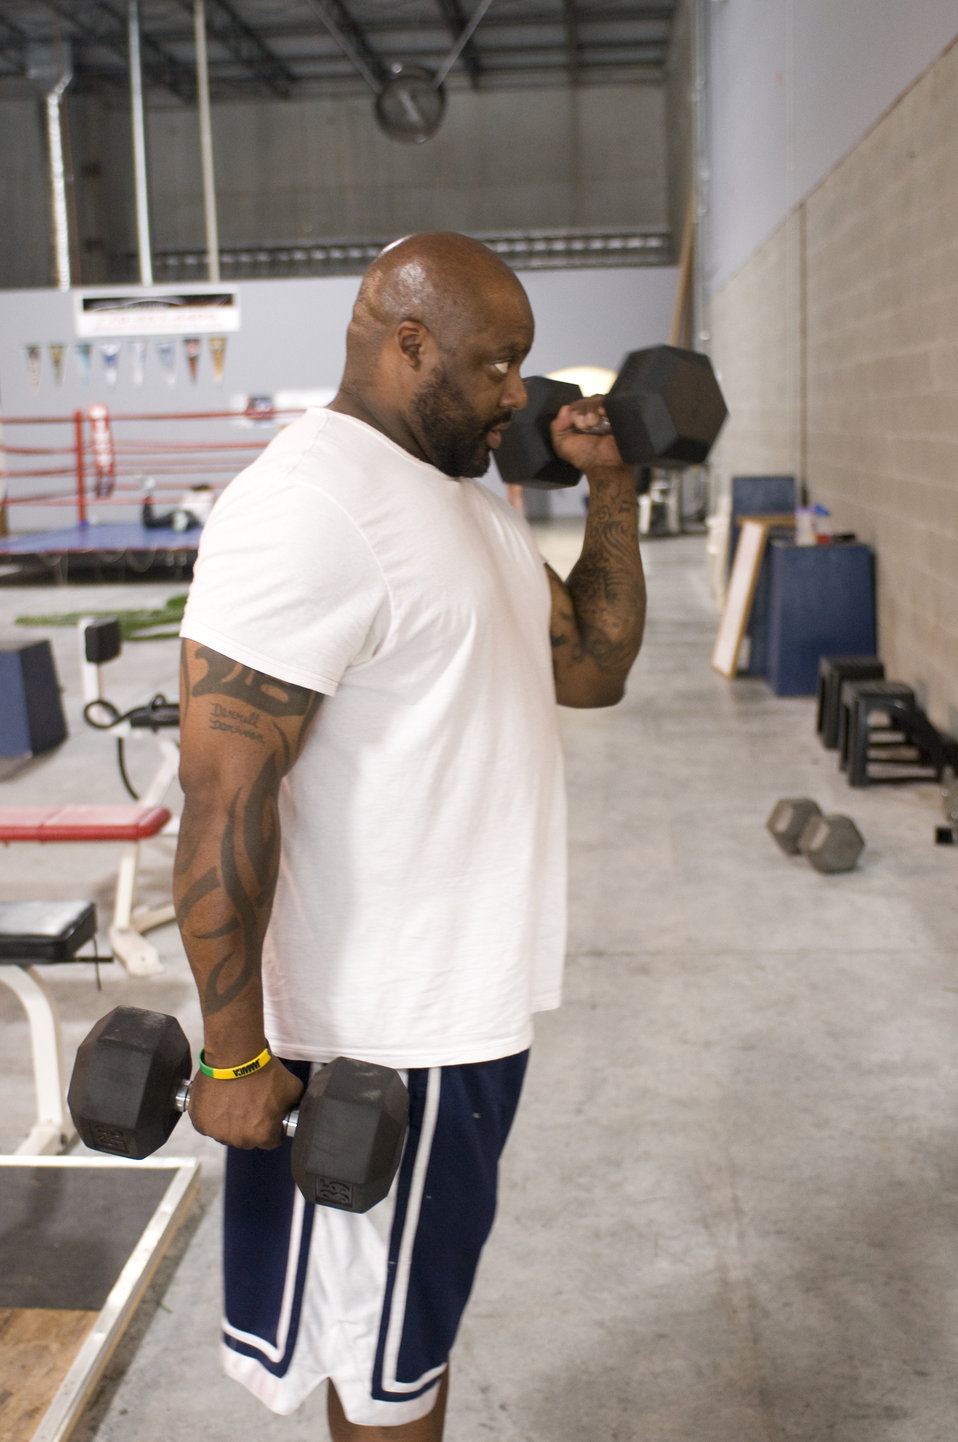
The man pictured here from a right side view, was inside a gymnasium performing various strength-training exercises. At this point in his exercise routine, he was performing curls using a 35lb dumbbell held in each clenched fist. Here, his left arm had been flexed, bringing the weight up to shoulder level, while his right arm was still extended, its weight at hip level. Hopefully, he was also keeping well hydrated during his exercise regimen by drinking fresh water during his workout.